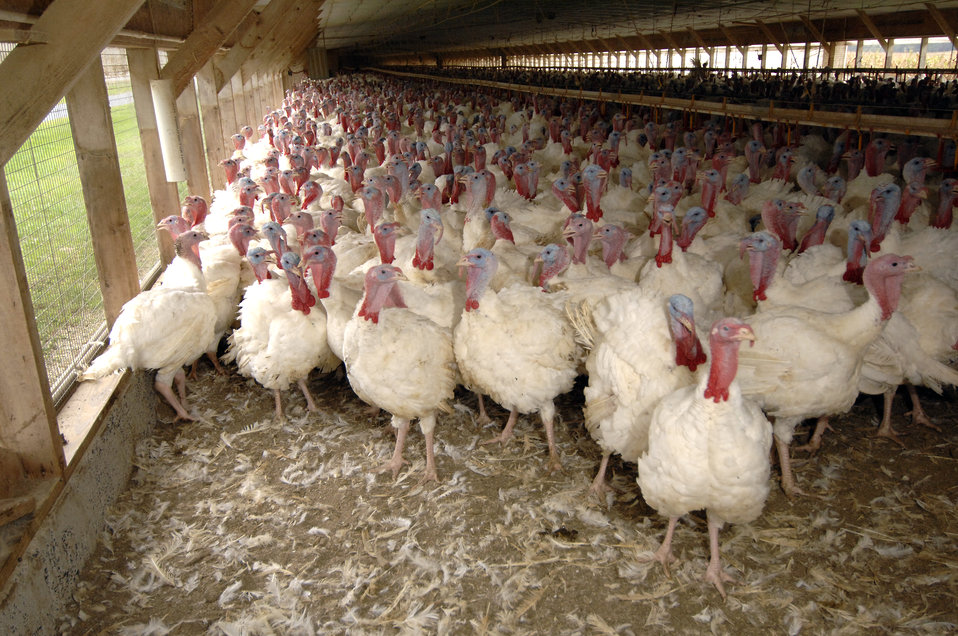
Farm-bred domesticated turkeys are big business in Rockingham County, Virginia on September 9, 2008.